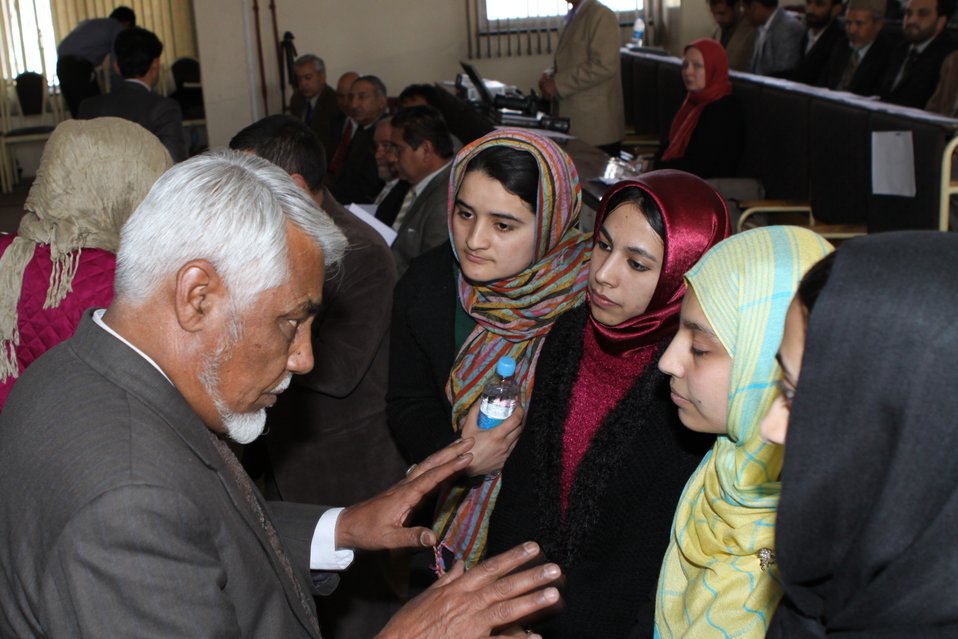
Female University Students Complete Internship

Kabul, Afghanistan | March 16, 2011 – In response to a demand for qualified Afghan engineers, Kabul University celebrated completion of an intensive five-month Mentor Protégé Training Program today by 10 female fourth year university students. The Training Program is a joint effort between the Government of the Islamic Republic of Afghanistan, the U.S. Agency for International Development (USAID), and the Universities of Kabul, Kandahar, Alberoony in Kapisa, Shiekh Zayed in Khost. The graduation ceremony highlighted collaboration with these national institutions in building the technical skills of young Afghans, made possible by USAID.

Four of the interns are engineers, while the remaining six are from the faculties of computer science, economics, and psychology.

Speaking about the event, H.E. Minister of Public Works Abdul Qudus Hamidi said, “The future of Afghanistan lies in developing the skills of our youth, and the engineering skills of these graduates today represent a small but important step forward for the country.”

Keynote speakers at the ceremony included H.E. Deputy Minister of Higher Education Abdul Rahim; USAID Senior Deputy Mission Director Robert Hellyer; and Chancellor of Kabul University Professor Hamidullah Amin. Approximately 150 people, including current and former students attended the graduation.

Launched last year, the Mentor Protégé Training Program has provided qualifying students the opportunity to intern with USAID’s Strategic Provincial Roads-South and East Afghanistan project and gain practical experience in a real work environment. The goal of the program was to offer interns the opportunity to gain hands-on experience to reinforce their formal studies. A total of 30 students from four national universities have benefitted from this program.

“The promotion of women’s rights is integrated into the overall U.S. Government development strategy and can be found in key programs, including education, healthcare, security, rule of law, political participation, agriculture, and economic development,” said Robert Hellyer. “The U.S. Government is committed to the Afghan leadership of programs that directly enhance development, particularly as it relates to women’s issues.”

This event also highlighted the learning achievements of students and emphasized the importance of hands-on internship programs. The curriculum is designed to instill students with the knowledge and confidence to qualify for engineering positions upon completion of their fourth year at their respective universities.